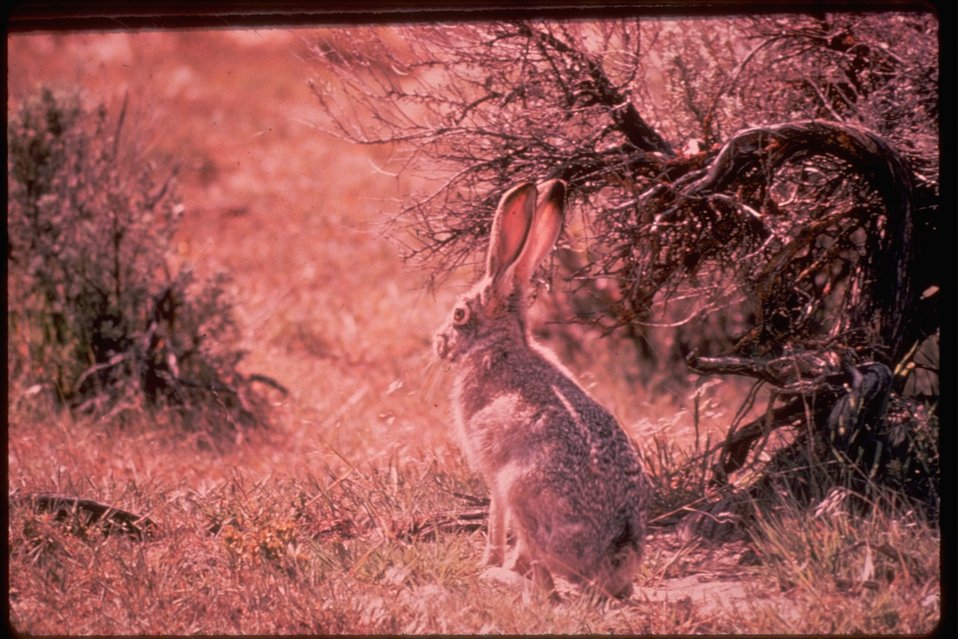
Jackrabbit